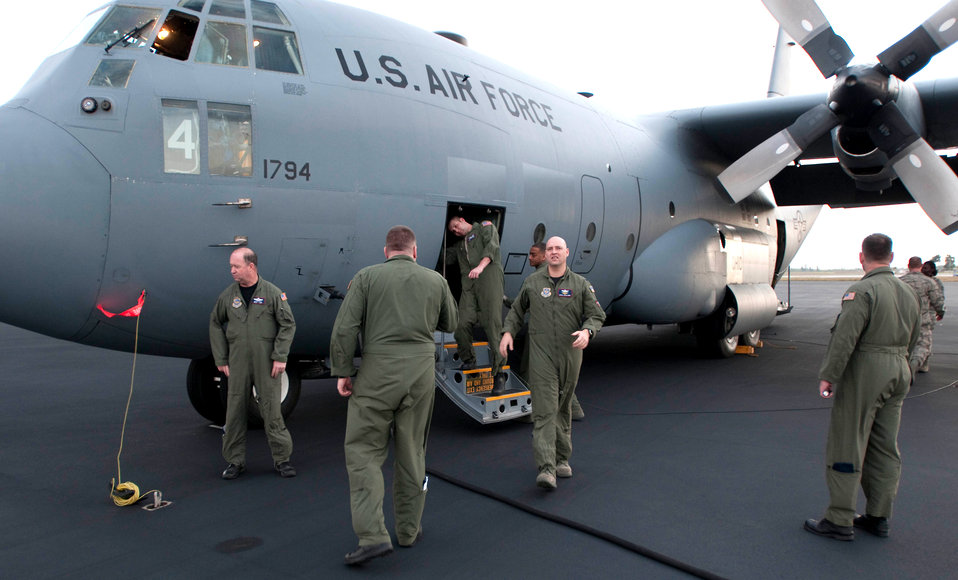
Missouri Air Guard C-130s, crews fly to Chile

Aircrew members prepare their C-130 Hercules for departure Feb. 6, 2010, from Homestead Air Reserve Base, Fla. The unit flew relief efforts to Haiti after it was devastated by an earthquake on Jan. 12, 2010. The wing also is assisting earthquake relief efforts in Chile. The aircrew members are from the Missouri Air National Guard's 139th Airlift Wing.